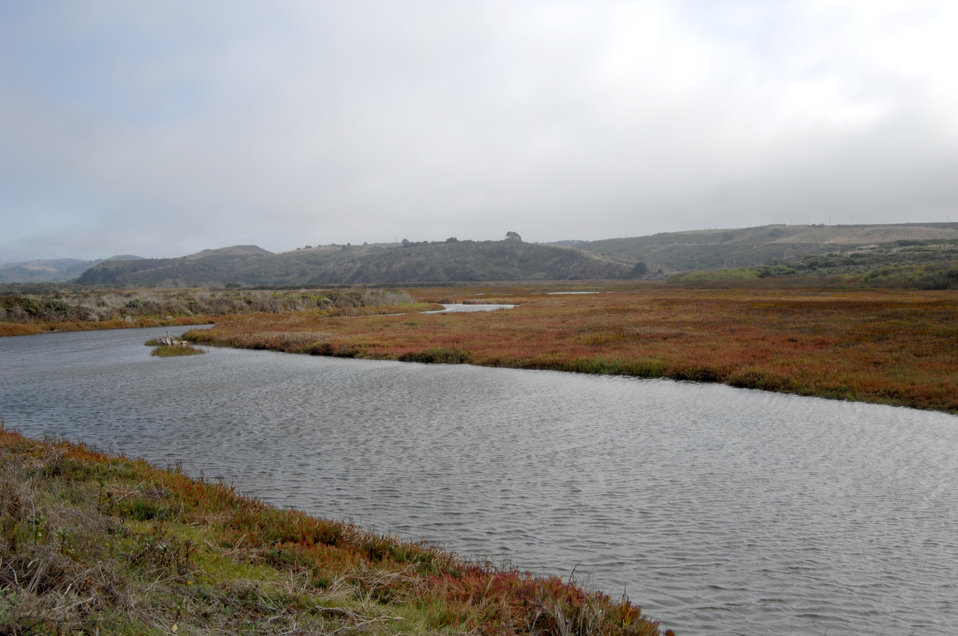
Pescadero Watershed 1

Although coho salmon are not currently found in the Pescadero Creek watershed, the watershed, including the lagoon, is designated critical habitat for this species.